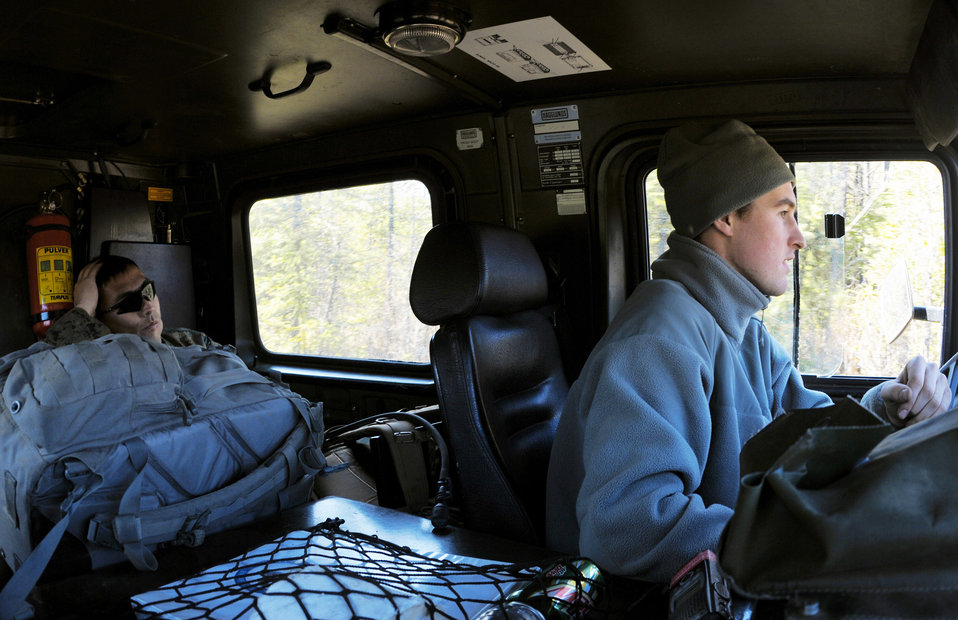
Servicemembers clear Alaskan bombing range

Airman 1st Class Brandon Wood navigates a trail while Marine Sgt. Ray Conard watches from the backseat May 14 at the Pacific Alaskan Range Complex. Training downrange provides practice for disposing of live munitions which teaches safety techniques and hones servicemembers' skills. Airman Wood is with the 354th Civil Engineering Squadron Explosive Ordnance Flight at Eielson Air Force Base, Alaska, and Sergeant Conard is with the 1st Explosive Ordnance Disposal, Camp Pendleton, Calif.